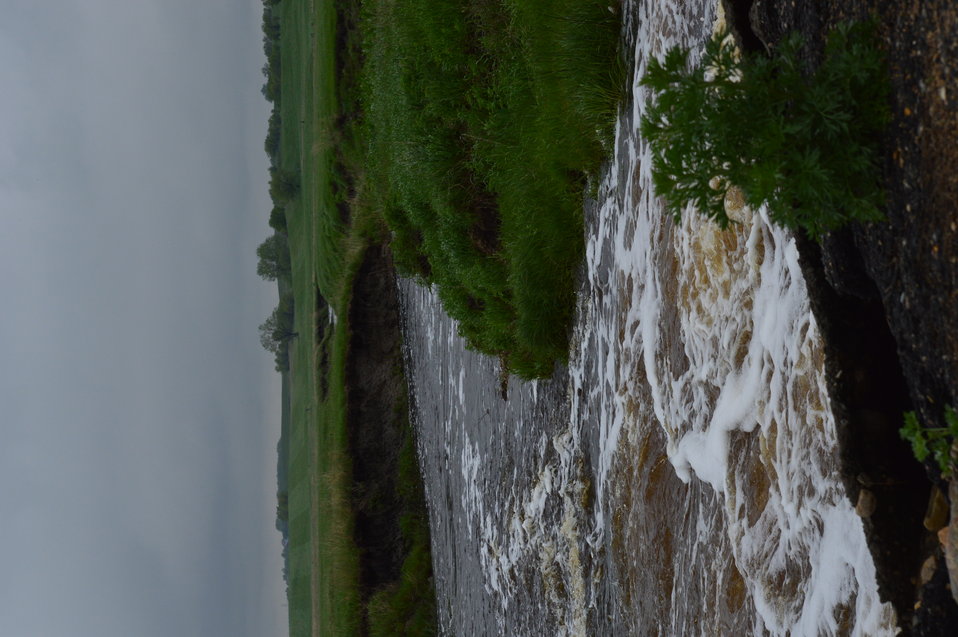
Creek flows through Lost Lake NWR

Scenery and wildlife at Lost Lake National Wildlife Refuge in North Dakota.